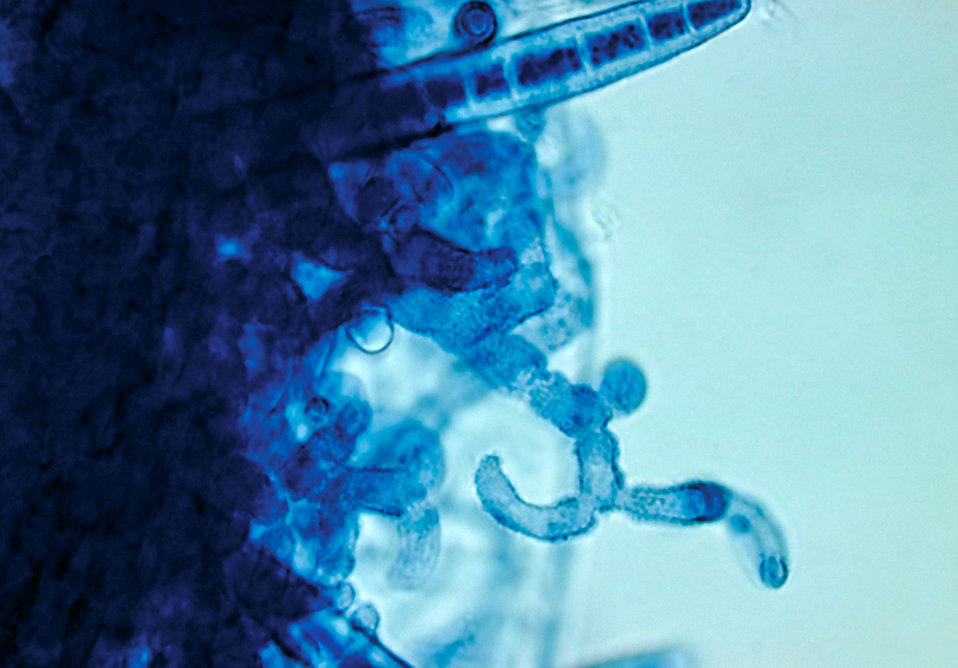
This is the edge of a mature cleistothecium of the fungus Arthroderma grubyi, formerly Nannizzia grubyia.